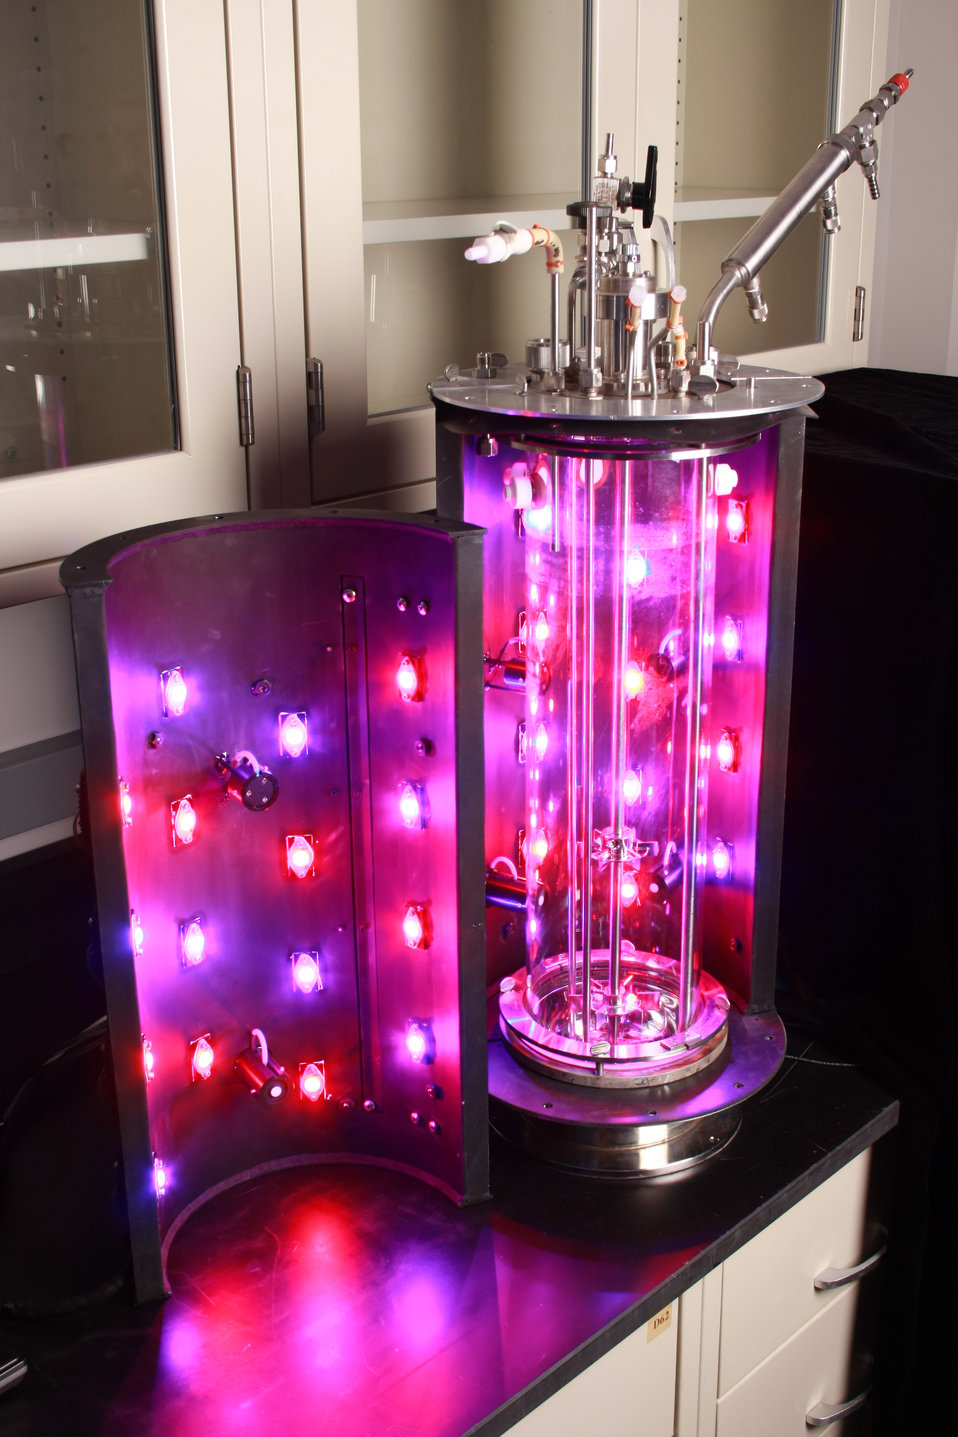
Multiprogram Research/Development Site where science/engineering are applied to today's leading technical questions.
At Pacific Northwest National Laboratory, a novel cutting-edge custom light enclosure for photobioreactor blocks ambient light from entering a bioreactor while providing red and blue light using energy-efficient LEDs. This photobioreactor will be used to optimize hydrogen and biofuel production from photosynthetic microbes. Its large volume and continuous culture capability enables mass-production of biomass for biofuels and alternative fuel research.